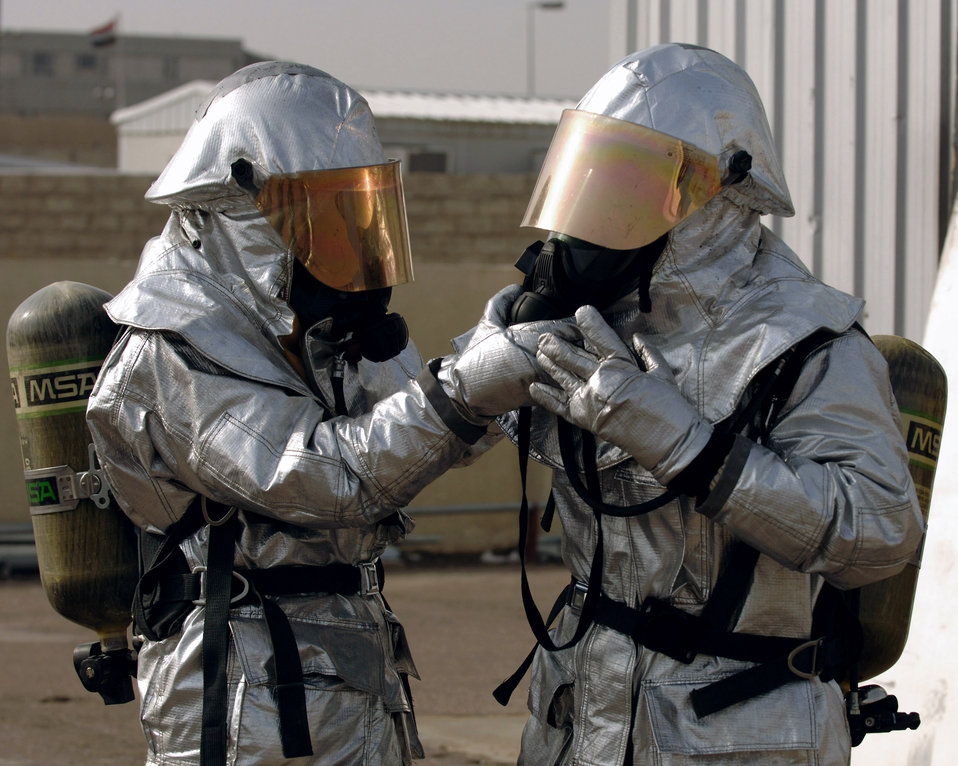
AF firefighters relocate, expand Iraqi fire training course

An Iraqi firefighter double checks his partner's personal protective equipment before participating in a live fire training scenario in Baghdad, Iraq, Dec. 24. The firefighters are taking the firefighter apprentice course being taught by members of the U.S. Air Force.